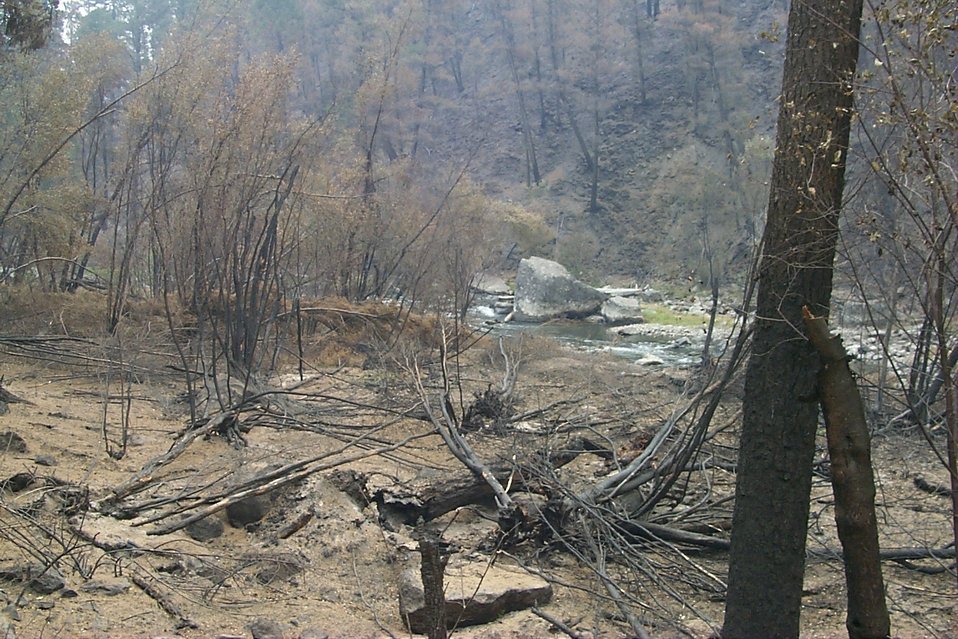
Burn area Fire Clearwater Fire Salmon Field Office USRD Upper Snake River District